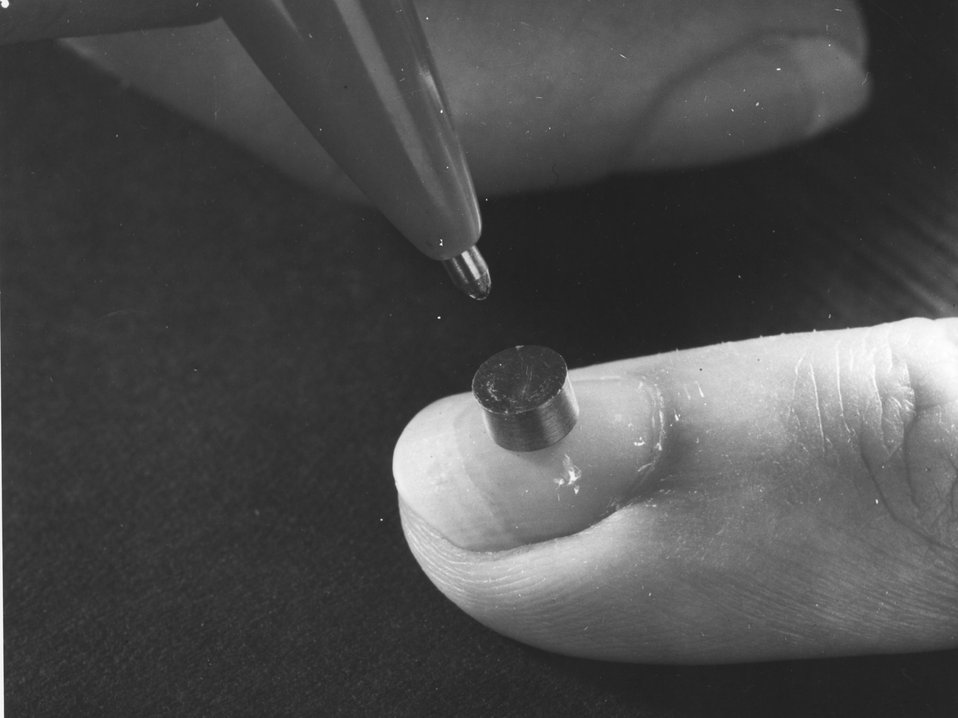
This thulium pellet, when irradiated, forms thulium-170 and is used as an X-ray source in a portable X-ray camera. Circa 1961.